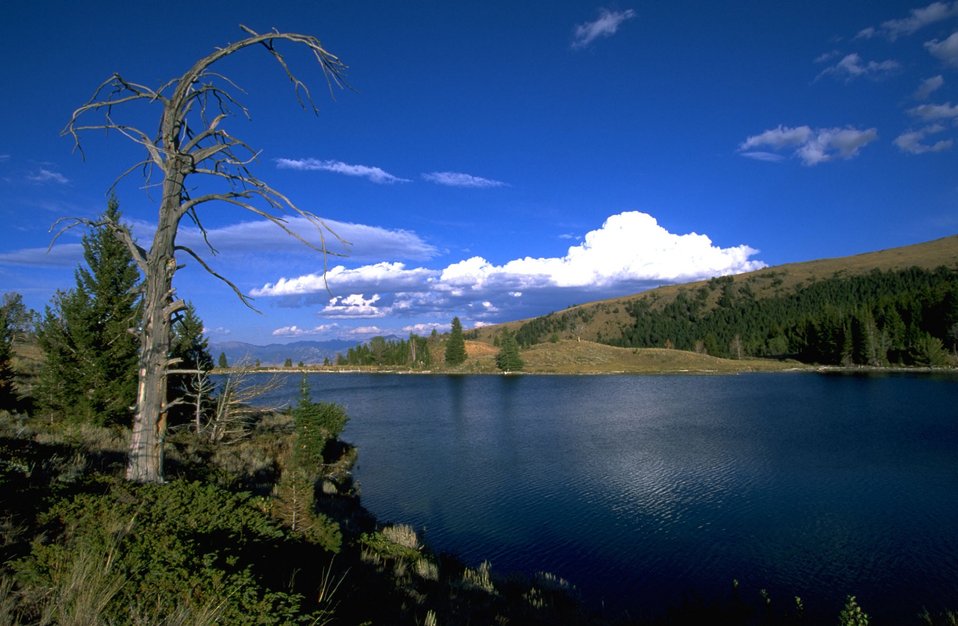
Axolotl Lake with dead Tree in the foreground